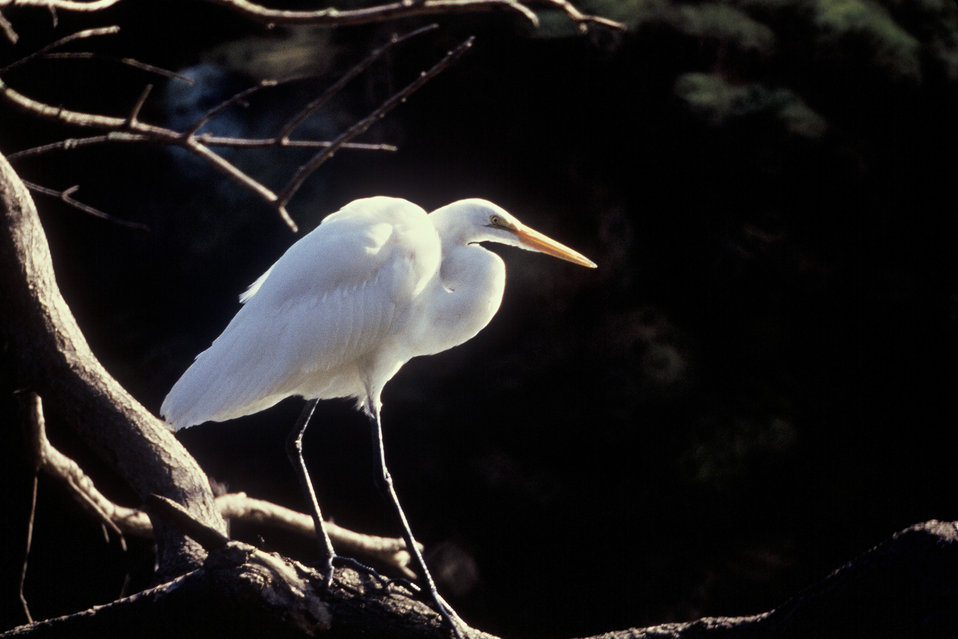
Great Egret.